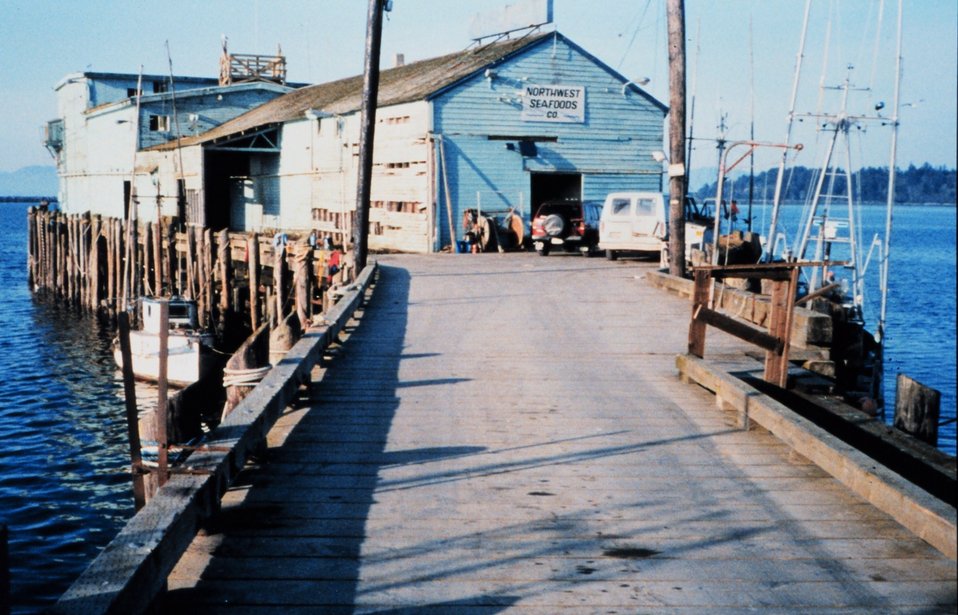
Rustic appearing Northwest Seafoods Company Pier.